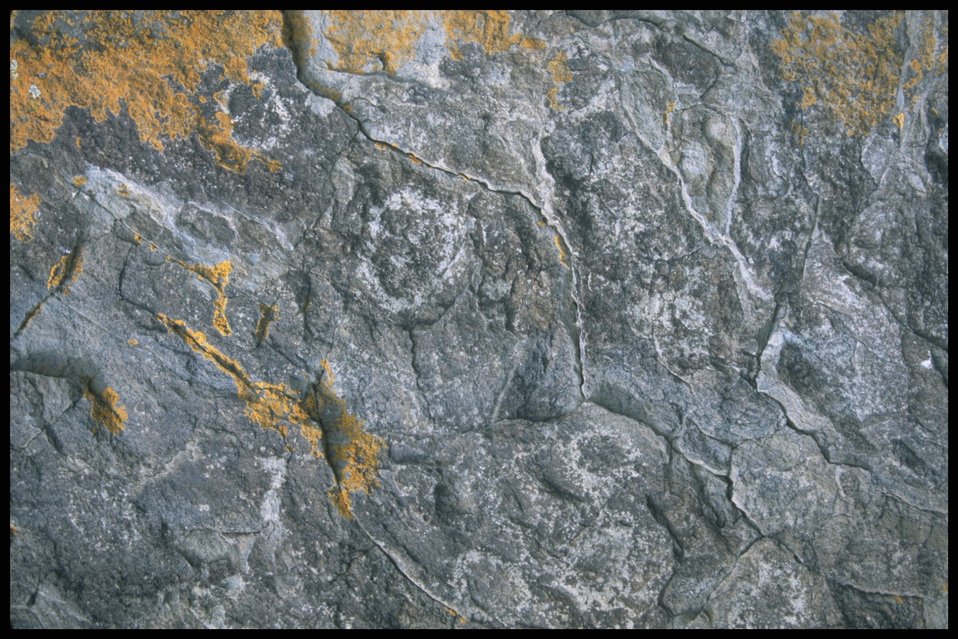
Indian petroglyphs, Lakeview District.